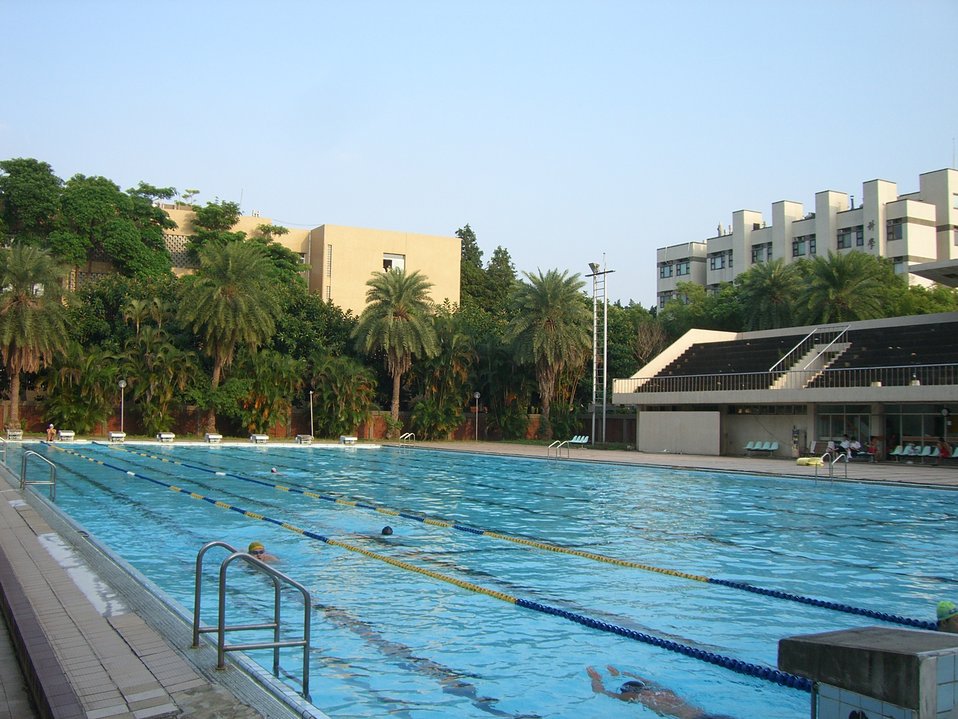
NCTU campus